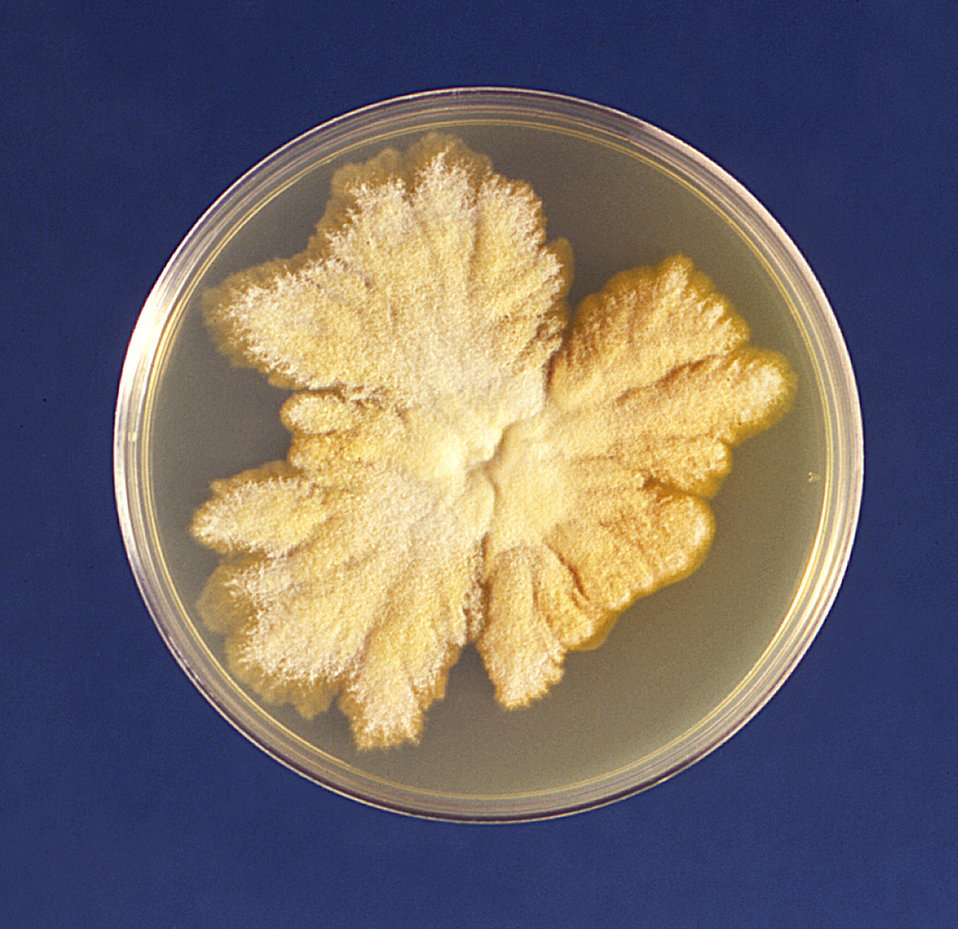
This is a plate culture of growing colonies of the fungus Trichophyton mariatii.